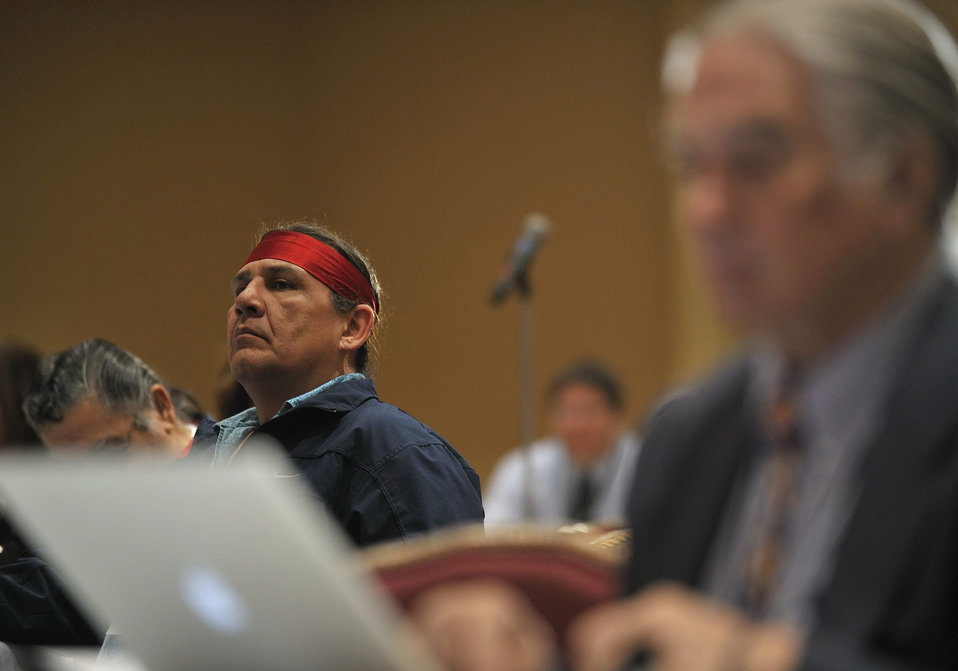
Tribal Energy Summit